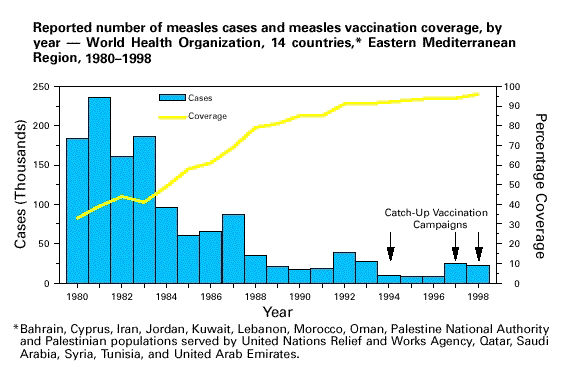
Eastern Mediterranean measles cases and vaccination coverage, 1980-1998.